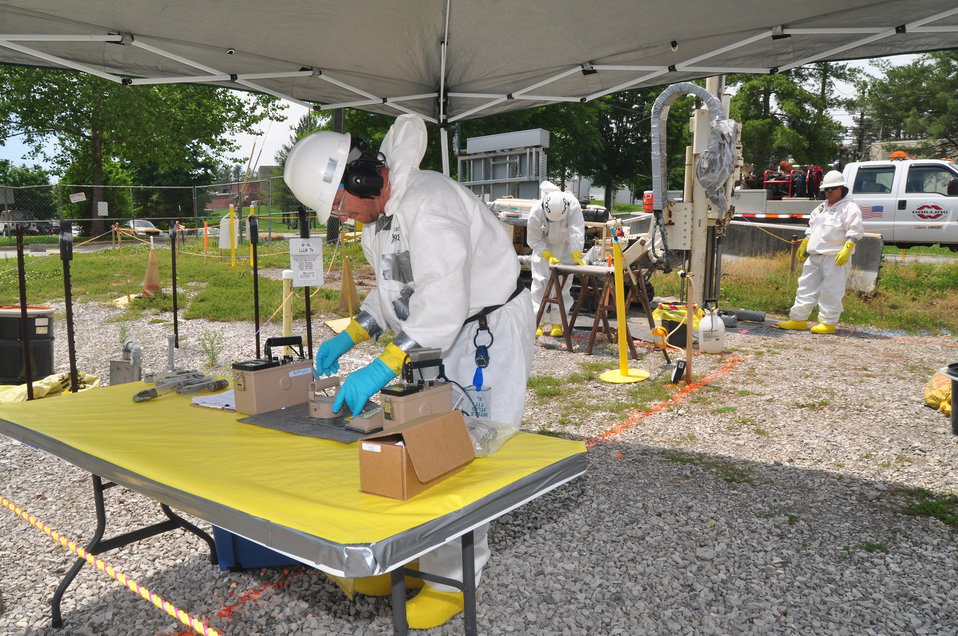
Oak Ridge training

Workers prepare to sample soil around Tank W-1A at Oak Ridge National Laboratory. The 4,000-gallon tank was removed in January and workers are now removing the surrounding contaminated soils. The project is expected to be complete this summer in accordance with the Tennessee Department of Environment and Conservation and the U.S. Environmental Protection Agency’s milestone.